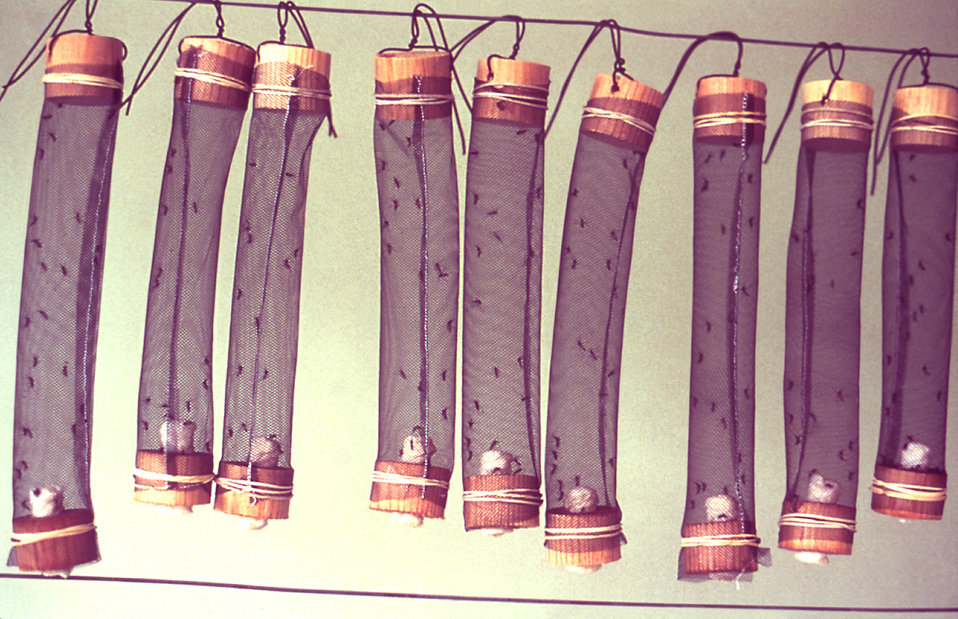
This 1981 photograph depicts a wire stringer of 'mini' bioassay cages that were used in a field tests in which endemic mosquitoes were collected to be counted, and analyzed by further testing.